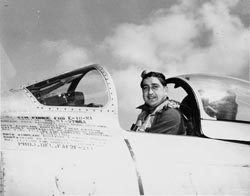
Col. Francis S. Gabreski

Francis